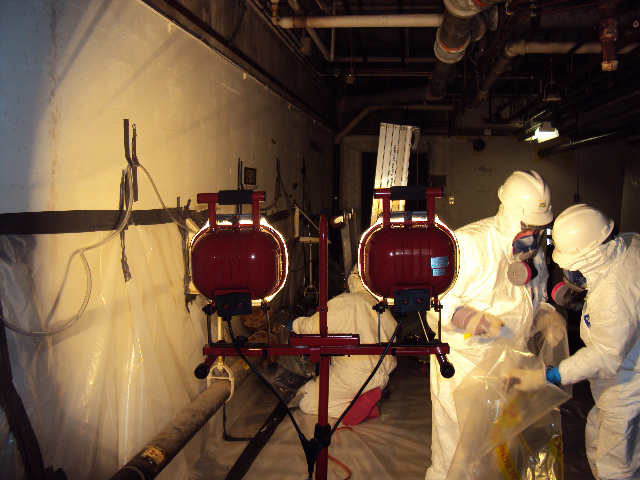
Argonne Forges Ahead in Waste Removal, Facility Demolitions with Recovery Act Help

Workers at Argonne remove drain piping during the decontamination and demolition of Building 310, the former Reactor Engineering Building.